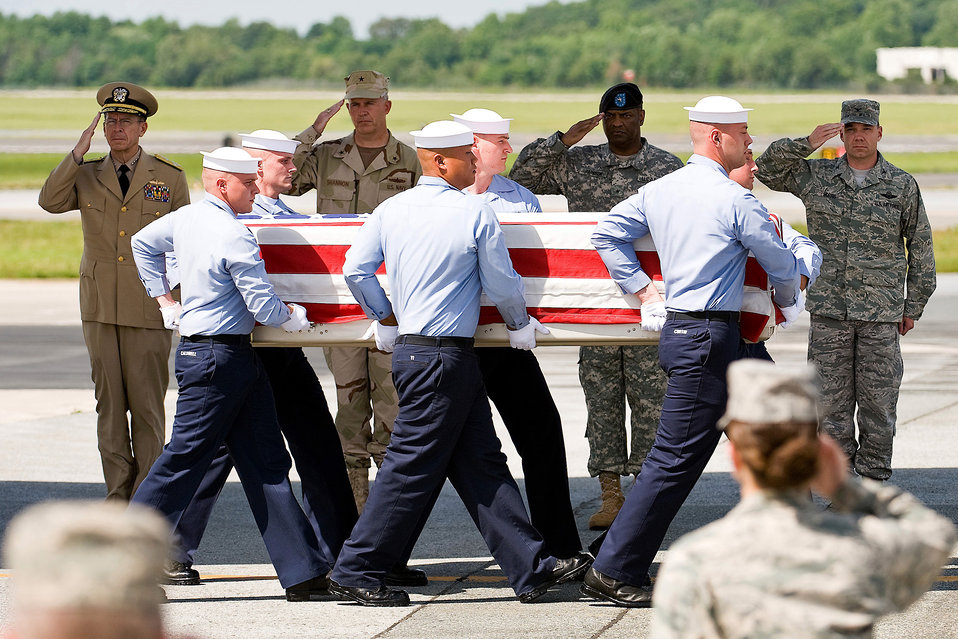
Remains of 7 troops killed in Afghanistan return home

A Navy team transfers the remains of Navy Petty Officer 2nd Class Tony M. Randolph as Navy Adm. Mike Mullen, Navy Rear Adm. James J. Shannon, Army Brig. Gen. Michael T. Harrison Sr. and Col. Manson Morris pay their respects July 8 at Dover Air Force Base, Del. Admiral Mullen is the chairman of the Joint Chiefs of Staff, and Admiral Shannon is the commander of the Naval Warfare Center. General Harrison is the director of Joint and Futures in the Office of the Deputy Chief of Staff, G8, Headquarters, Department of the Army. Colonel Morris is the 436th Airlift Wing commander.